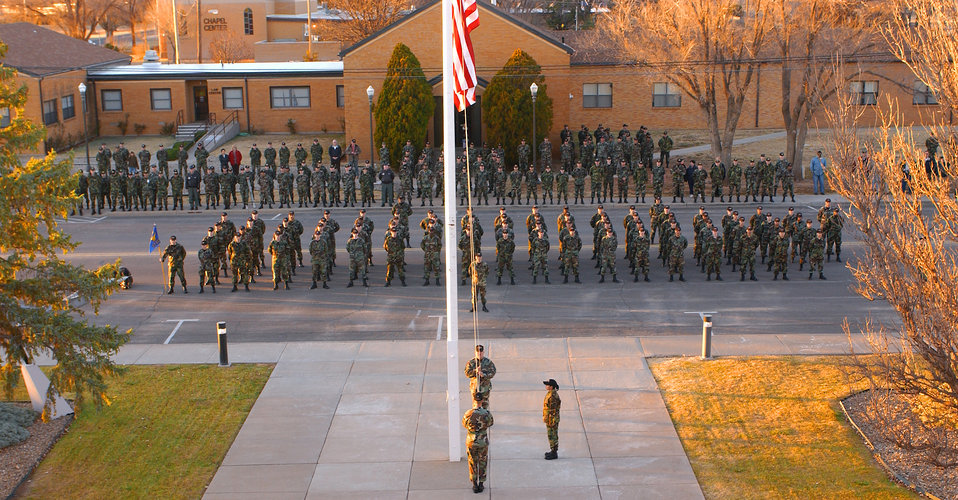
Honoring fallen comrade

Airmen from the 27th Civil Engineer Squadron perform a special retreat ceremony Dec. 6 in honor of their comrade Capt. Kermit Evans who was killed in an emergency helicopter landing Dec. 3. Captain Evans was one of 16 people aboard the Marine CH-46 helicopter and one of four servicemembers killed as a result of the landing near the shore of Lake Qadisiyah in western Al Anbar Province, Iraq. Captain Evans was the 27th CES Explosives Ordnance Disposal Flight commander at Cannon Air Force Base, N.M.